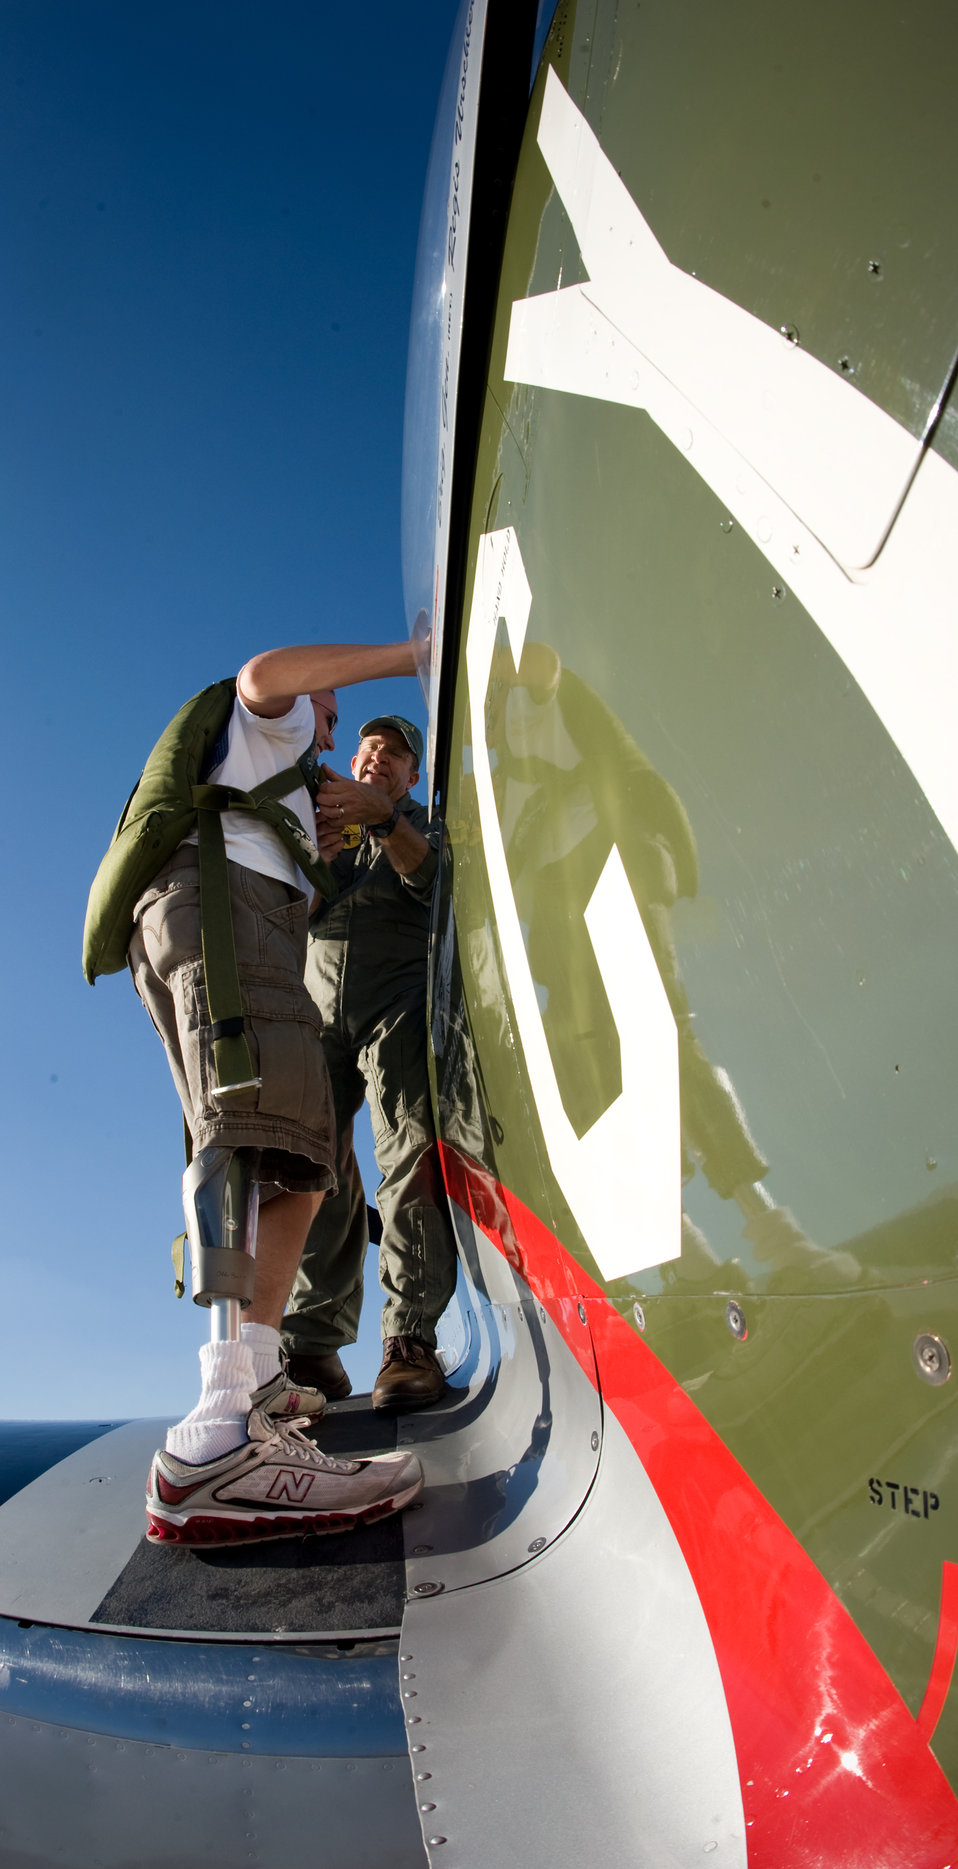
Warrior Flight